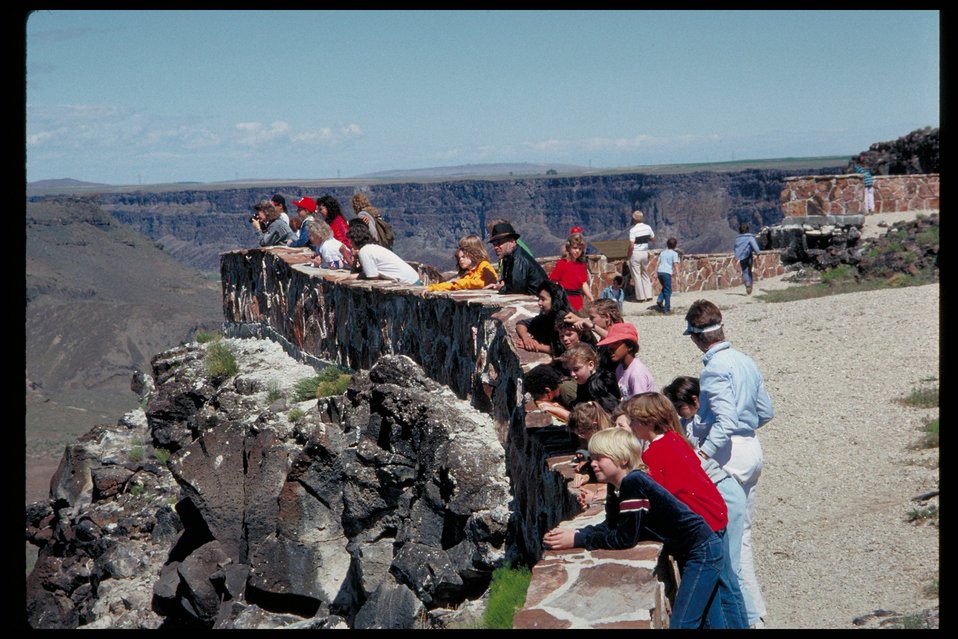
Dedication Point Birds of Prey National Conservation Area BOP Owyhee Field Office LSRD Lower Snake River District